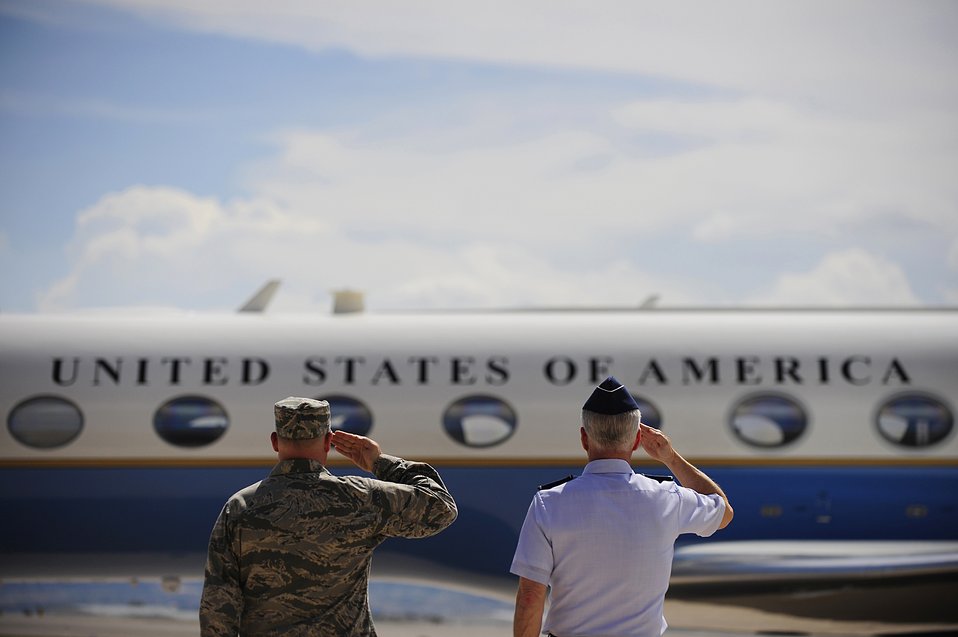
Salute

Gen. William Shelton (right) and Col. Chris Crawford salute as Defense Secretary Leon Panetta leaves Peterson Air Force Base, Colo., July 29, 2011, after visiting with leaders at North American Aerospace Defense Command and U.S. Northern Command. General Shelton is the commander of Air Force Space Command. Colonel Crawford is the commander of the 21st Space Wing.